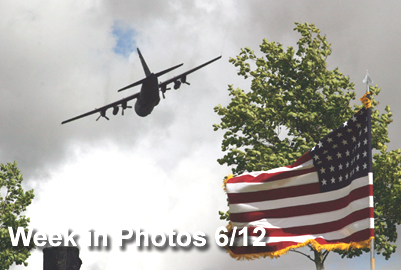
Air Force Week in Photos for June 12 highlights photos from around the Air Force. In this photo, a C-130 Hercules flies over the Iron Mike memorial at La Fierre, France.